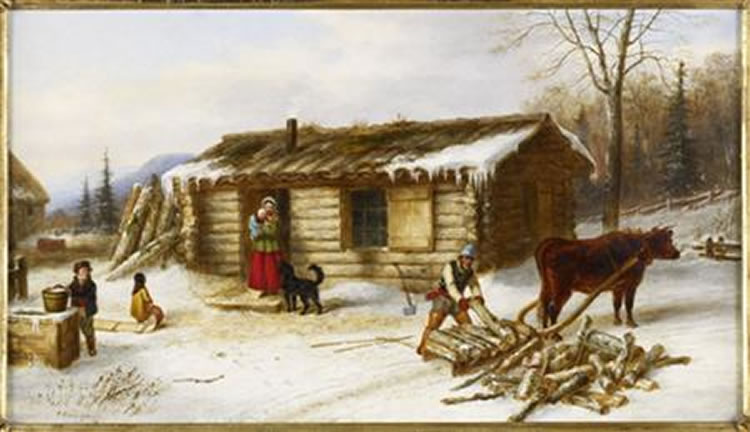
'Chopping Logs Outside a Snow Covered Log Cabin', oil painting by Cornelius Krieghoff